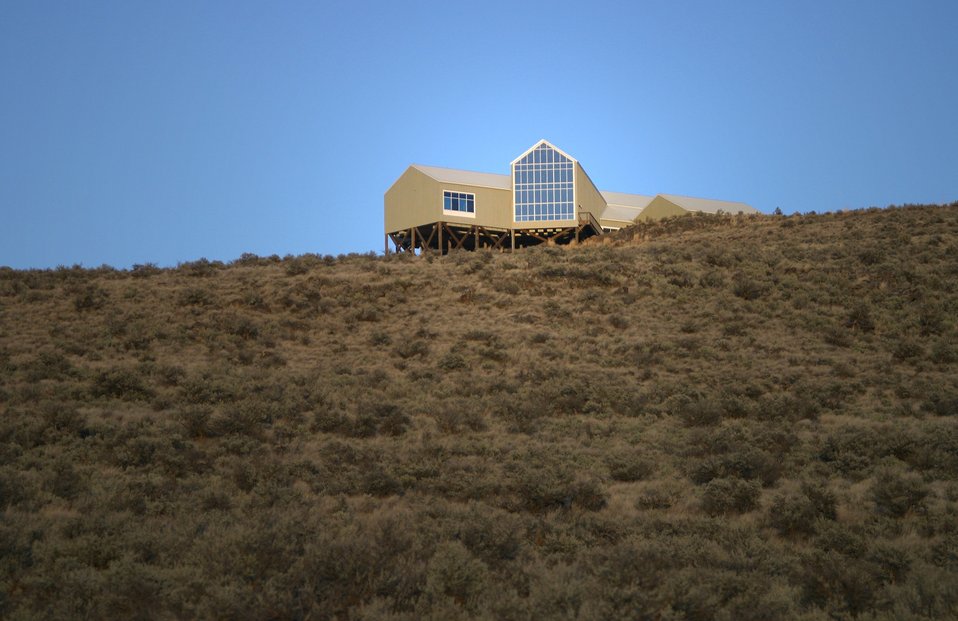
Early evening view of the NHOTIC from the Oregon Trail just below the Center.